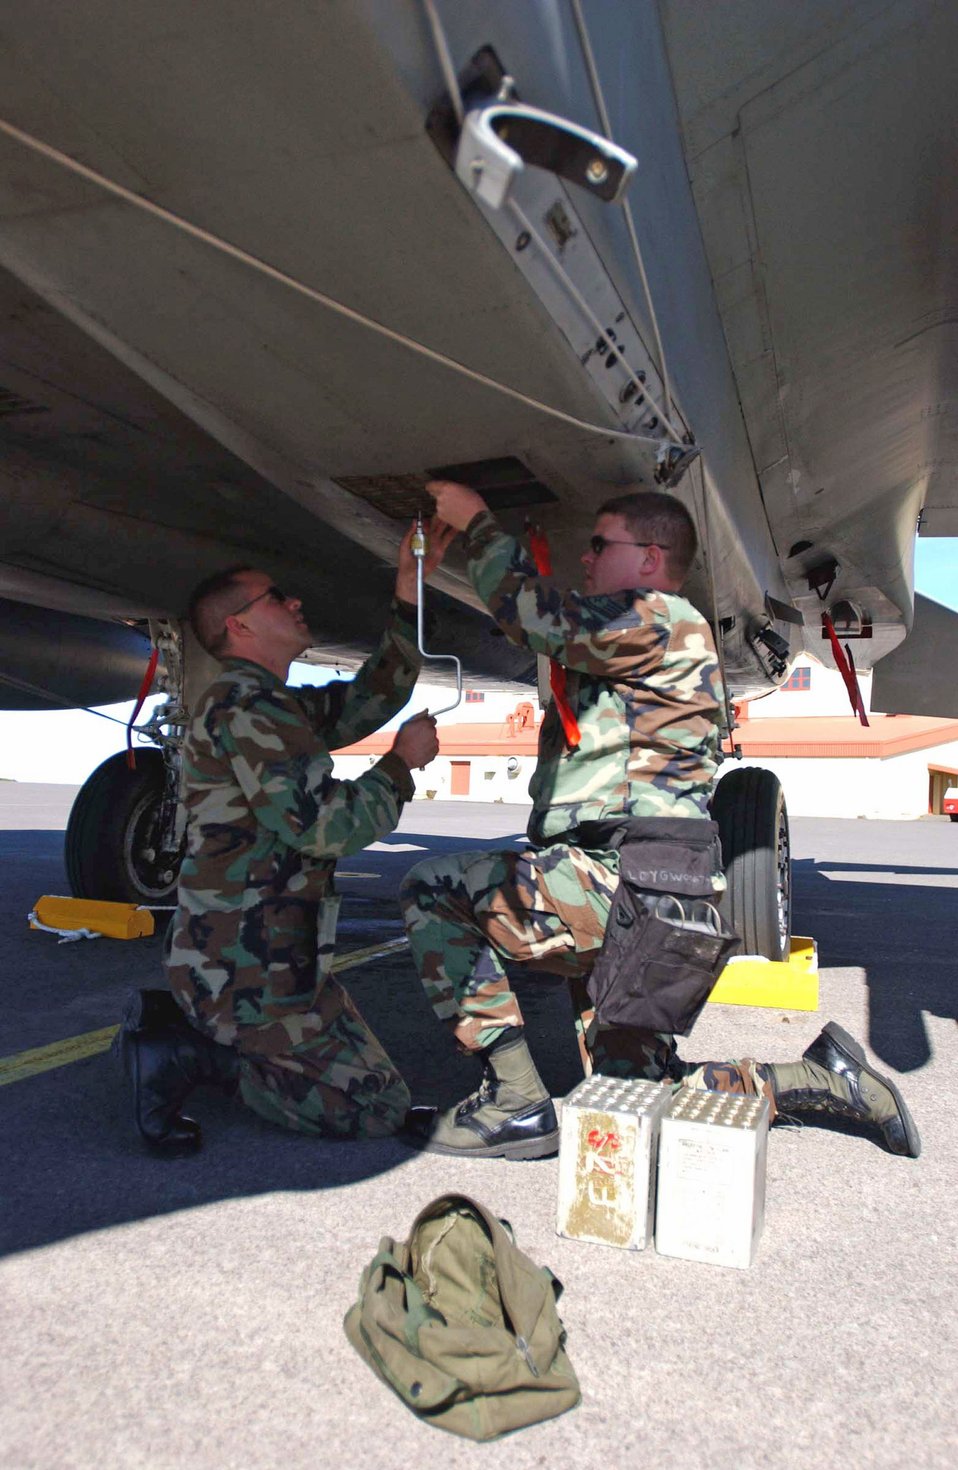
Northern Viking tests command, control capabilities

Staff Sgt. Thomas Cunningham and Airman 1st Class Matt Locklear load flares onto an F-15 Eagle in support of Northern Viking 2007 Aug. 16 at Keflavik Airport, Iceland. Approximately 300 people from around the world are participating in the exercise. Sergeant Cunningham and Airman Locklear are 48th Aircraft Maintenance Squadron weapons specialists from Royal Air Force Lakenheath, England.